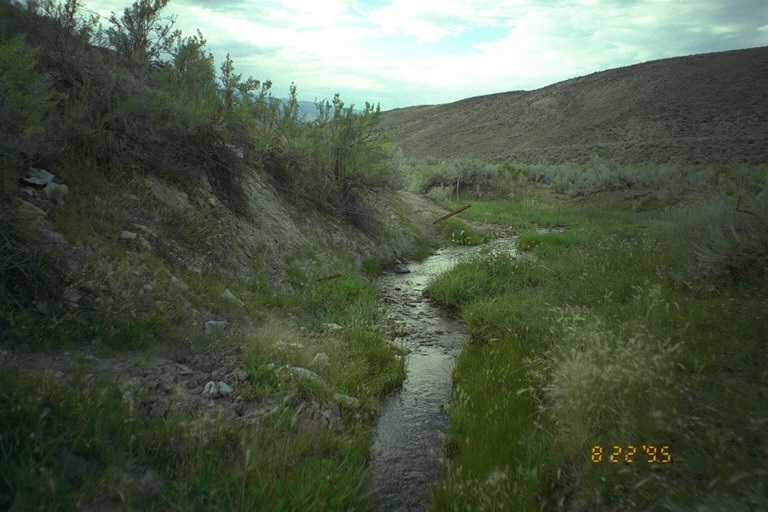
Riparian area Public Lands Salmon Field Office UCSC Upper Columbia Salmon Clearwater District